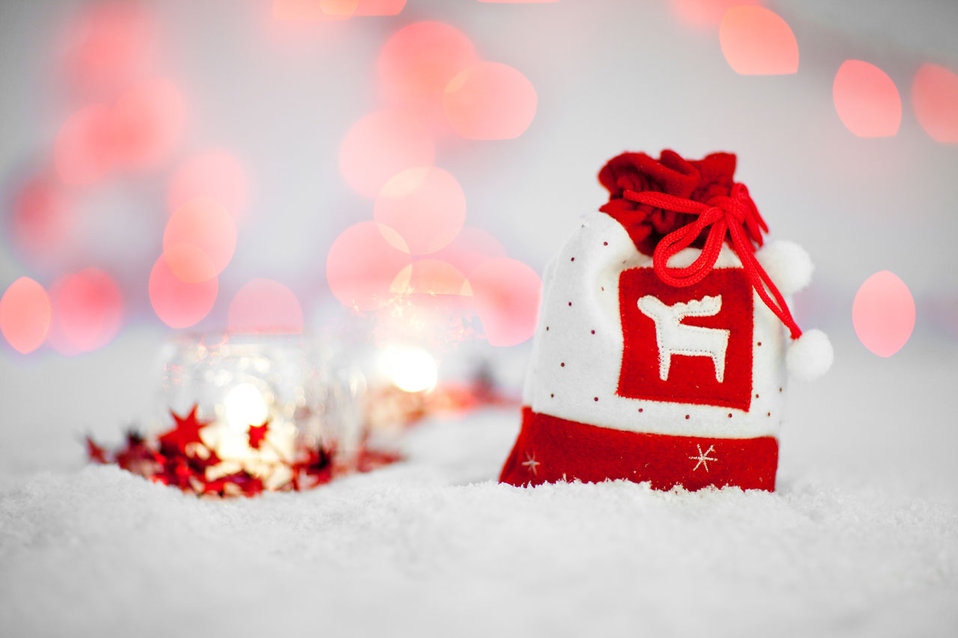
Christmas sack in snow with blurred candles and red christmas lights in the background.